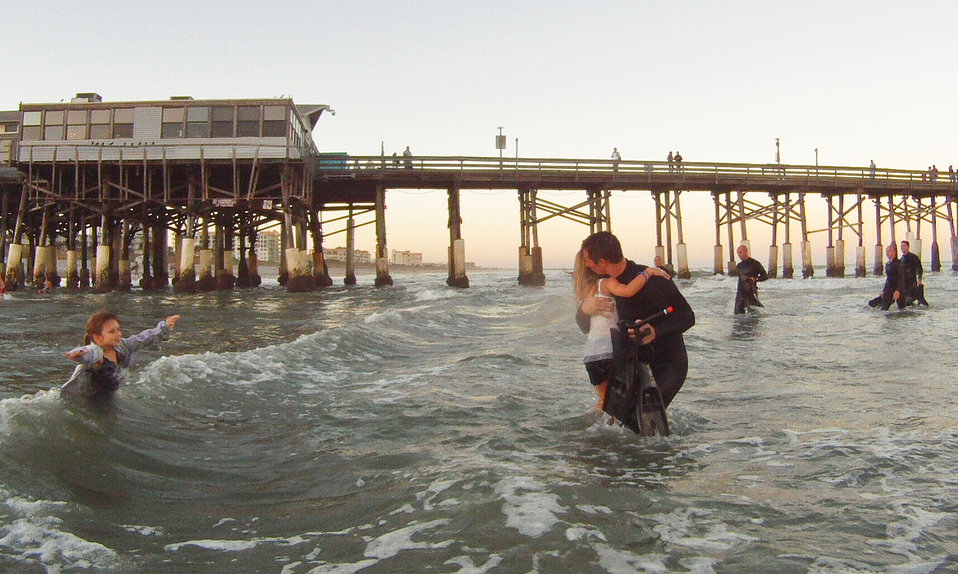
Pararescuemen demonstrate their skills during Air Force Week

The daughters of a pararescueman from the 920th Rescue Wing wade out to get a hug and a kiss as their father arrives near the shore after performing a freefall rescue demonstration Oct. 27, 2010 at Cocoa Beach, Fla. The event was part of Air Force Week Cocoa Beach, a weeklong event showcasing U.S. Air Force capabilities and increase public awareness.